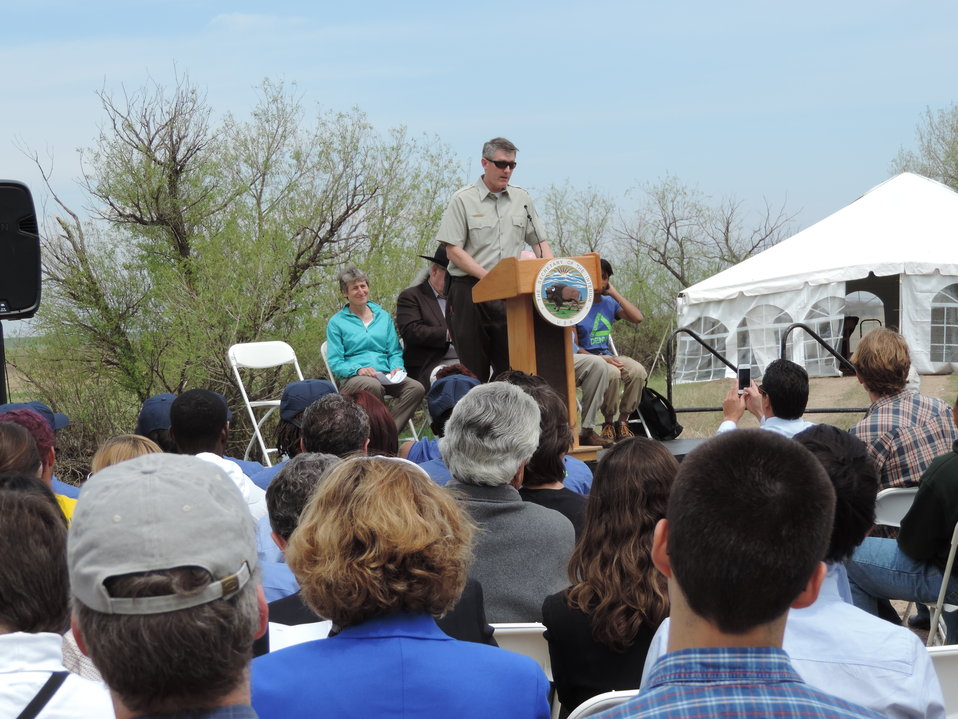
Project Leader David Lucas Introducing Secretary Jewell